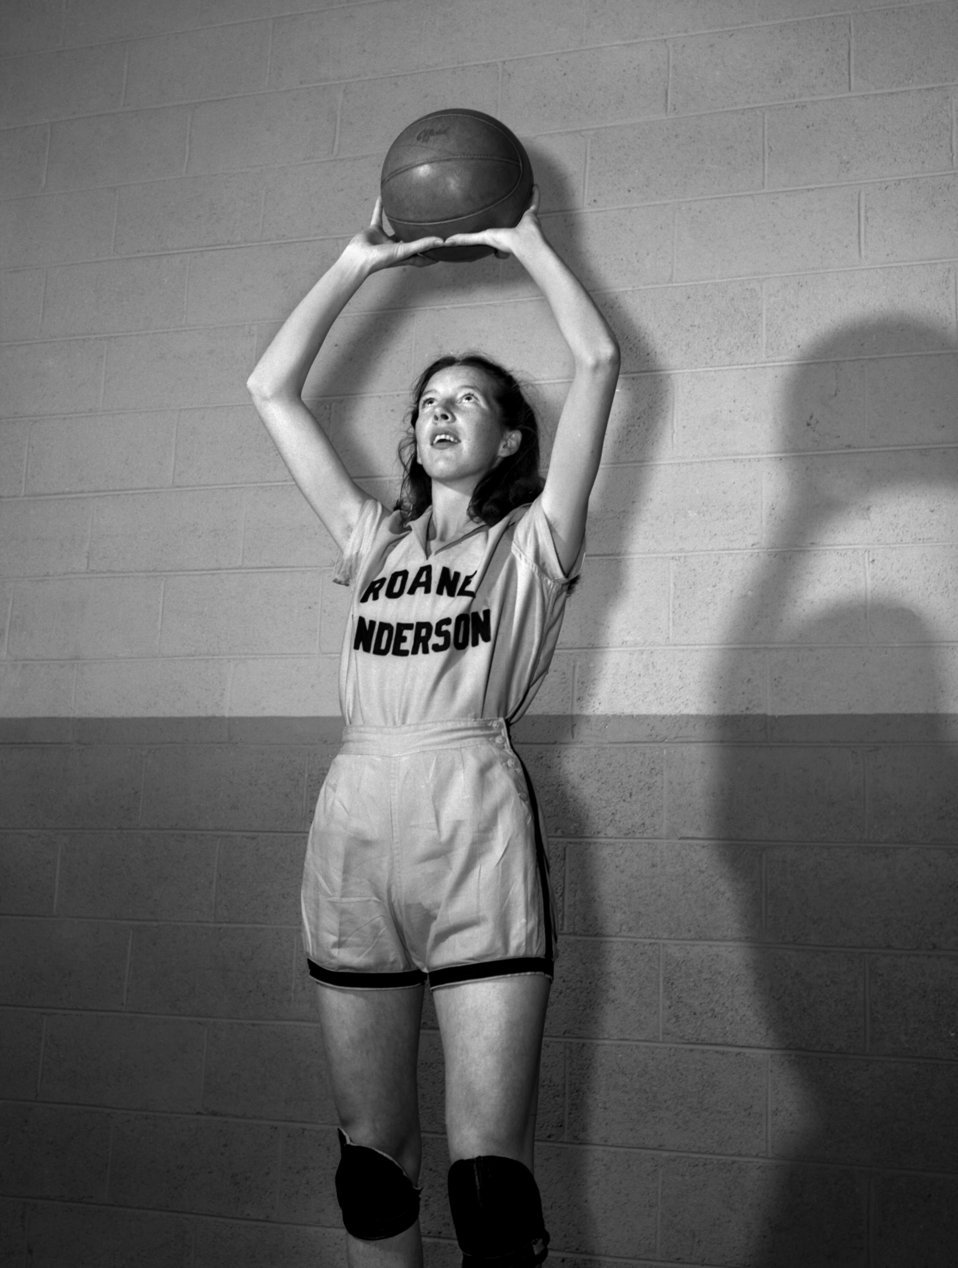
R. A. Basketball Oak Ridge

3271-4c DOE photo Ed Westcott 1-20-1947 Oak Ridge Tennessee